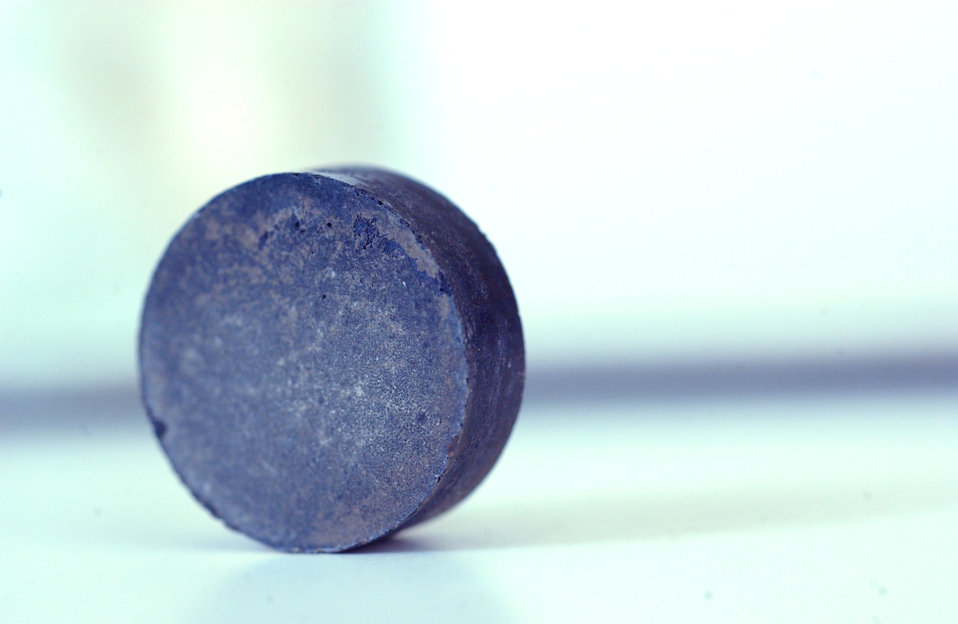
A neodymium-iron-boron magnet made using a new, one-step refining process develop at the Ames Laboratory that eliminates waste products.